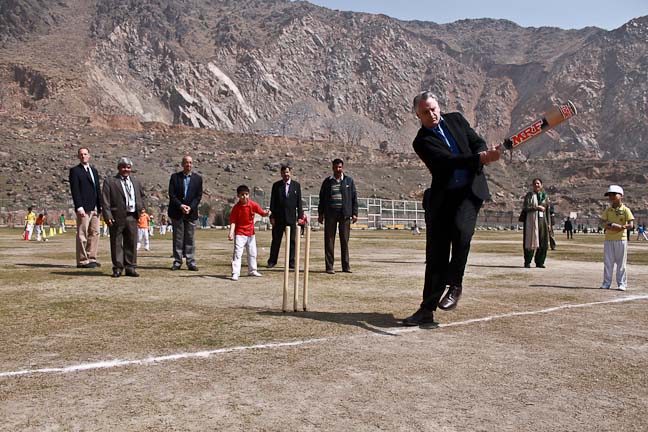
Ambassador Roemer Visits Jammu and Kashmir

U.S. Ambassador to India Timothy J. Roemer visits Jammu and Kashmir, March 17-18, 2011, to engage and listen to the people and connect with the youth of the state.